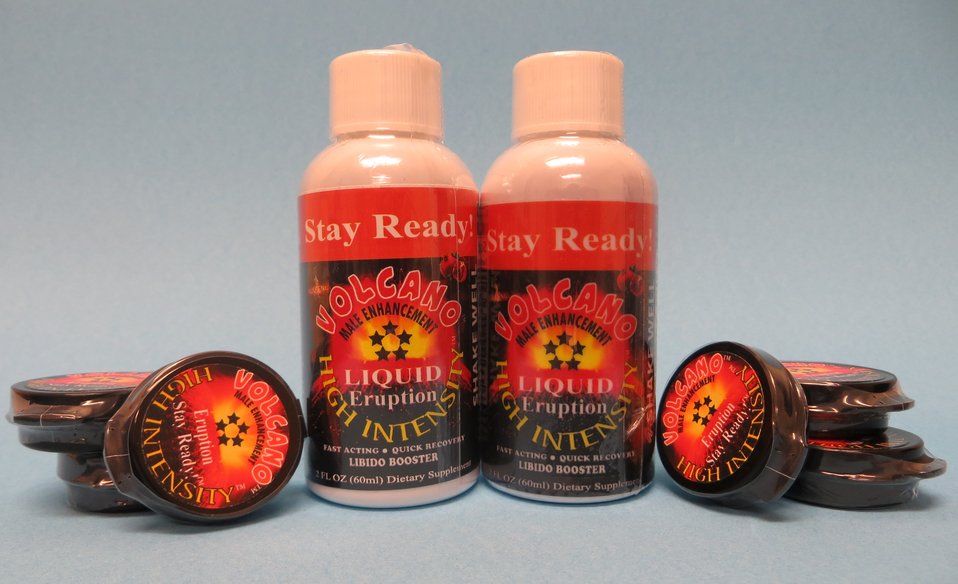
Volcano

July 22, 2013 - The FDA is advising consumers not to purchase or use 'Volcano,' a product promoted and sold for sexual enhancement. The product was found to contain undeclared desmethyl carbodenafil, dimethylsildenafil, dapoxetine. For more information, go to www.fda.gov/safety/recalls/ucm361709.htm

And read this Consumer Update: Beware of Fraudulent ‘Dietary Supplements’